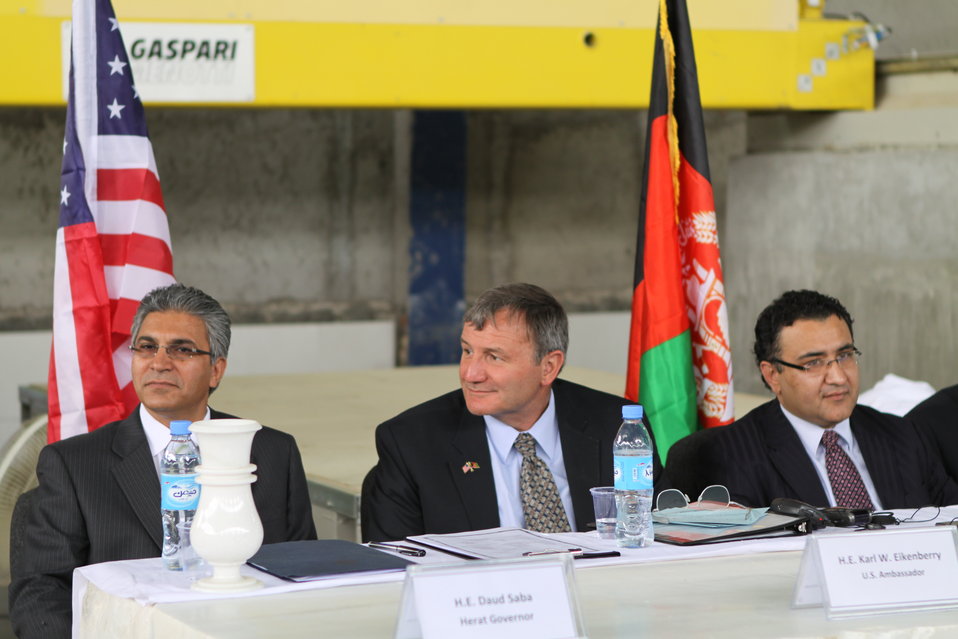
100525 Hirat Marble Conference 267